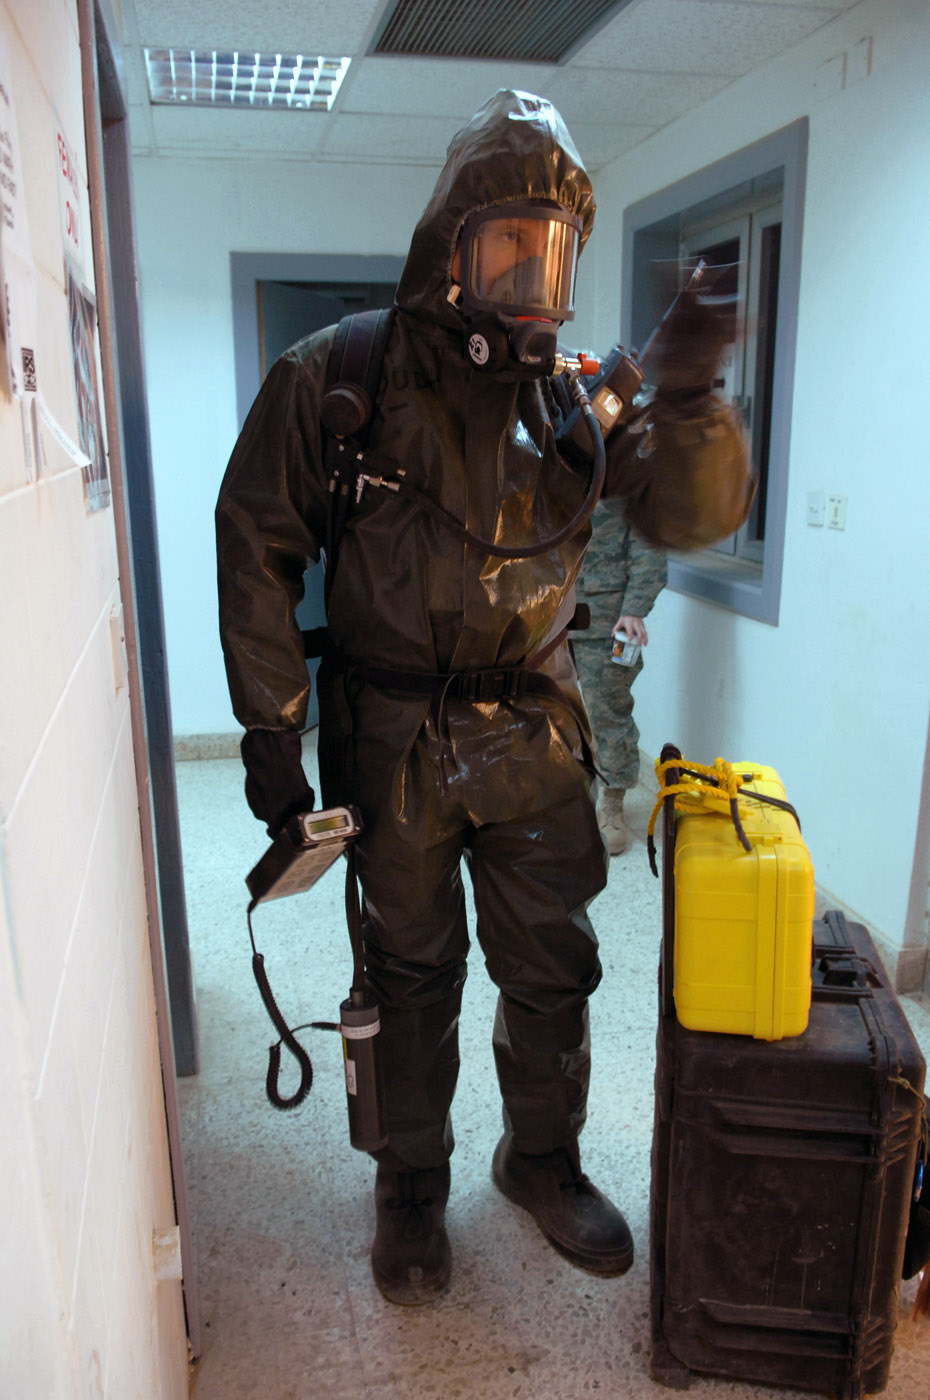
AOR emergency managers gather at Balad to hone skills

Senior Master Sgt. Thomas Stoudt shakes a light stick as he proceeds down a hallway while seeking out an unknown powder substance during a training event at Balad Air Base, Iraq, April 17. The training session was one of many that Airmen from Balad, Kirkuk Regional Air Base, Ali Base and Al Asad Airfield participated in during a week-long emergency management training session that concluded April 19. Sergeant Stoudt is deployed to Southwest Asia as the functional manager for the emergency management career field.